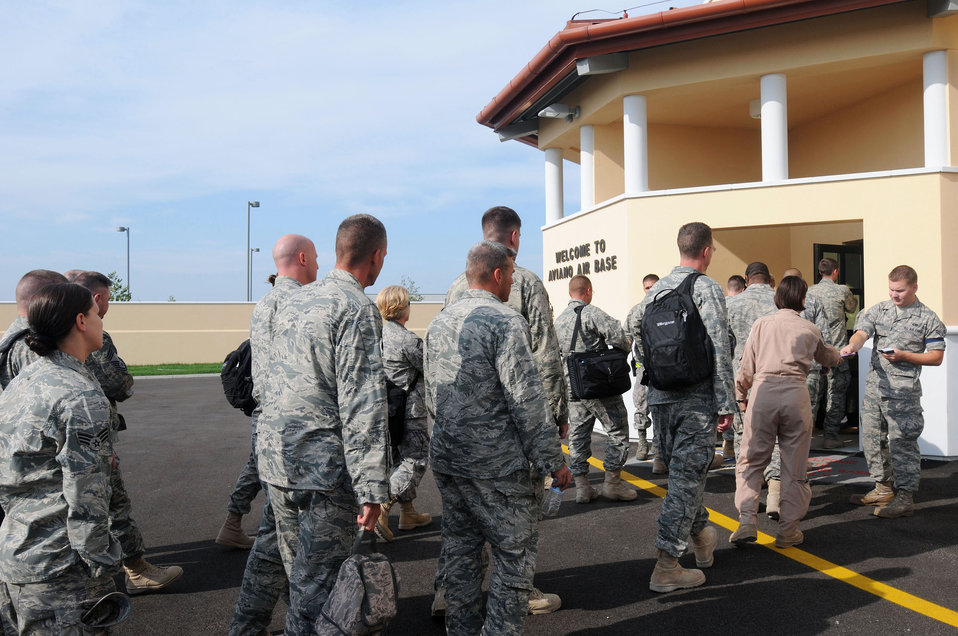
Aviano Airmen open doors to new NATO terminal

Airman 1st Class Travis Danahy (far right) hands out reboarding tickets to military servicemembers returning from deployment outside the new passenger and air freight terminal Sept. 11, 2009, at Aviano Air Base, Italy. The new facility has seating for 325 passengers. Airman Danahy is a 724th Air Mobility Squadron passenger service agent.